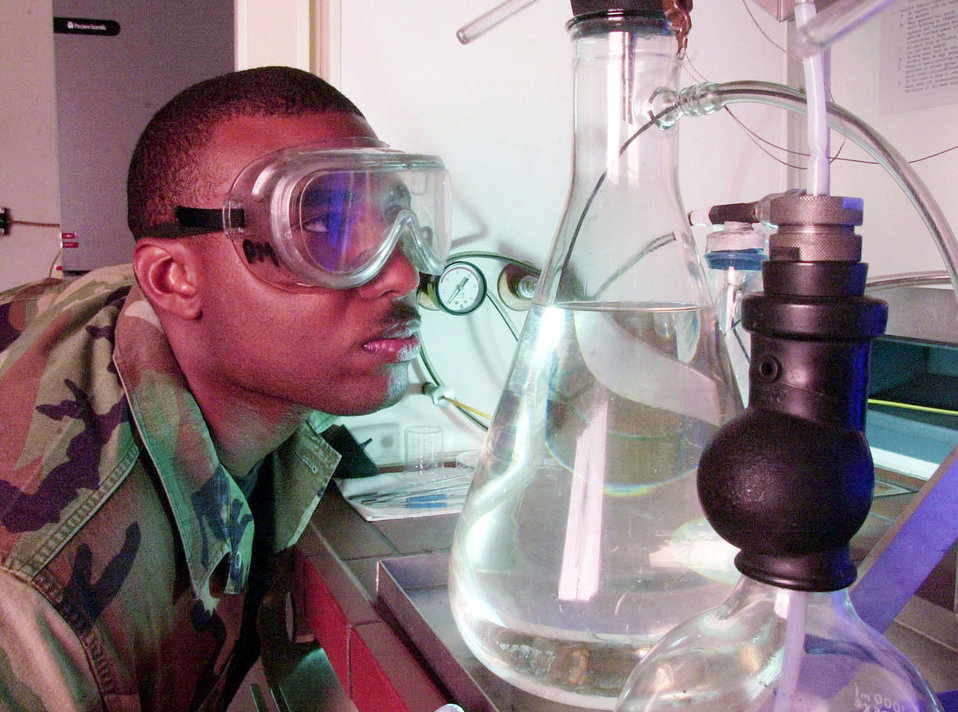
Lab work

YOKOTA AIR BASE, Japan -- Senior Airman Rickett Edwards, a fuels specialist from the 374th Supply Squadron/Fuels Management Flight, performs a Fuels Systems Icing Inhibitor test on JP-8 fuel to determine if more inhibitor additive is required to prevent ice crystals forming in flight. One of the major sources of contamination in aviation fuel is water. The laboratory conducts more than 500 fuels analysis monthly.